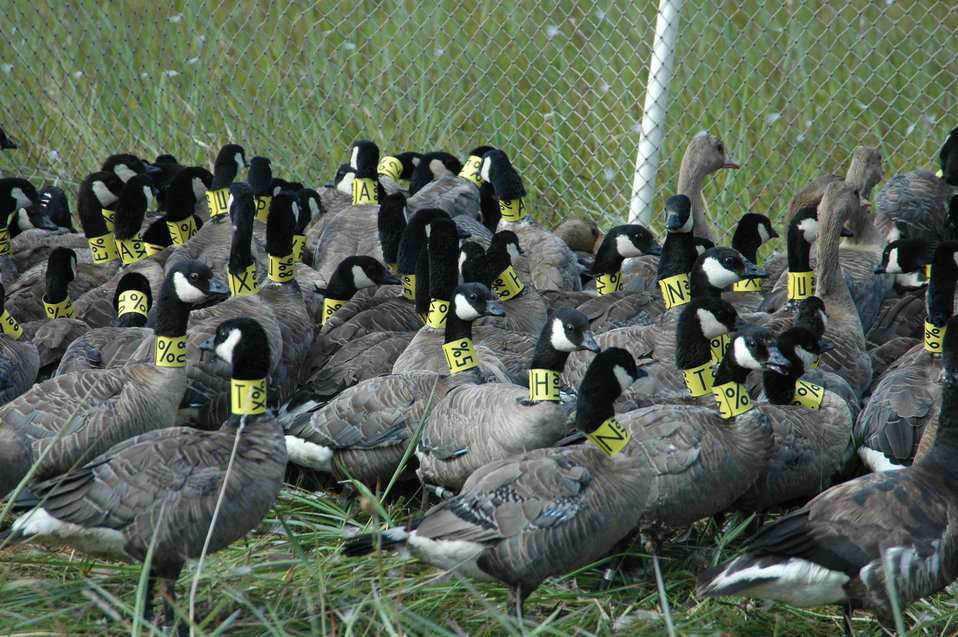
Holding pen full of collared cackling geese

A group of biologists, volunteers, biotechs, refuge staff, migratory bird management staff, etc joined forces to band and collar cackling cackling geese on the Yukon-Kuskokwim Delta.

Geese are put into holding pens until all of the captured birds have been processed.

USFWS Yukon Delta NWR
Photo Credit: